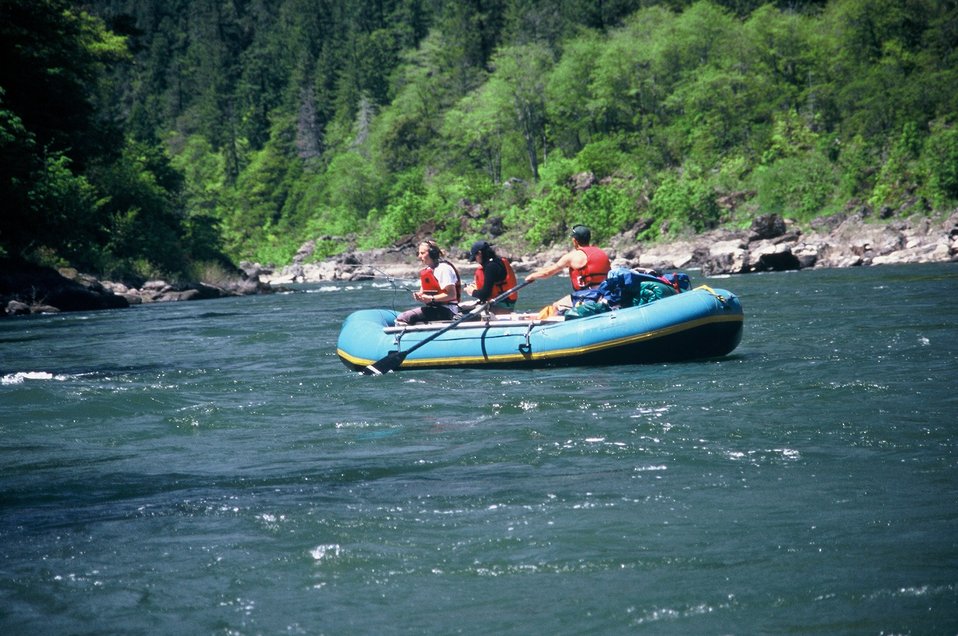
Wild section of the Rogue River from Grave Creek to Foster Bar May 19 to May 22.